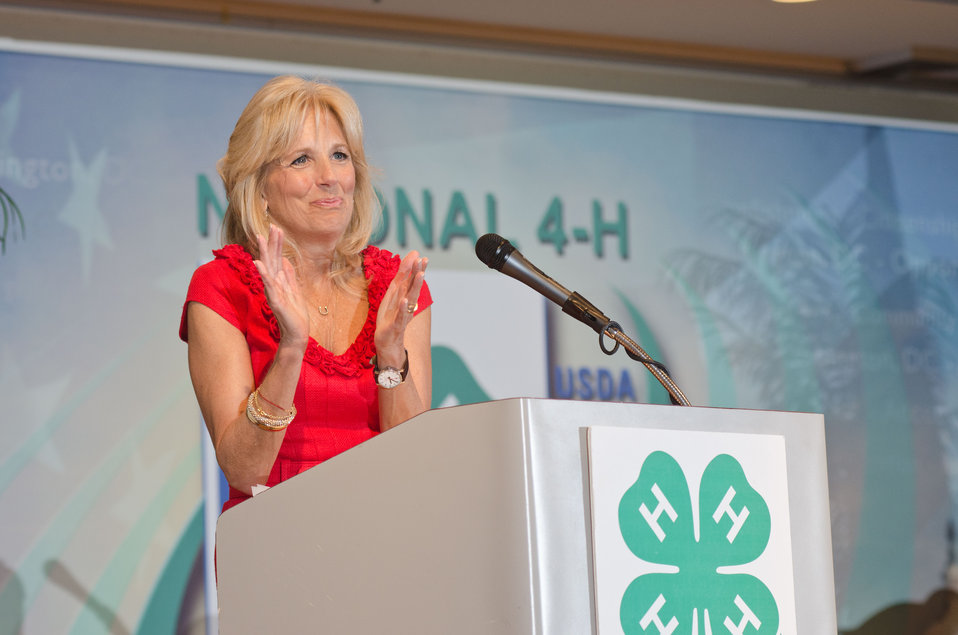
Second Lady Dr. Jill Biden applauds a young woman who service in the National Guard and as a member of 4-H, during a the National 4-H Conference, in Chevy Chase. MD, on Monday, March 26, 2012. Dr. Jill Biden spoke about 'Joining Forces,' the initiative started with First Lady Michelle Obama to encourage all Americans to support military families. Joining Forces is a comprehensive national initiative to mobilize all sectors of society to give our service members and their families the opportunities and support they have earned.